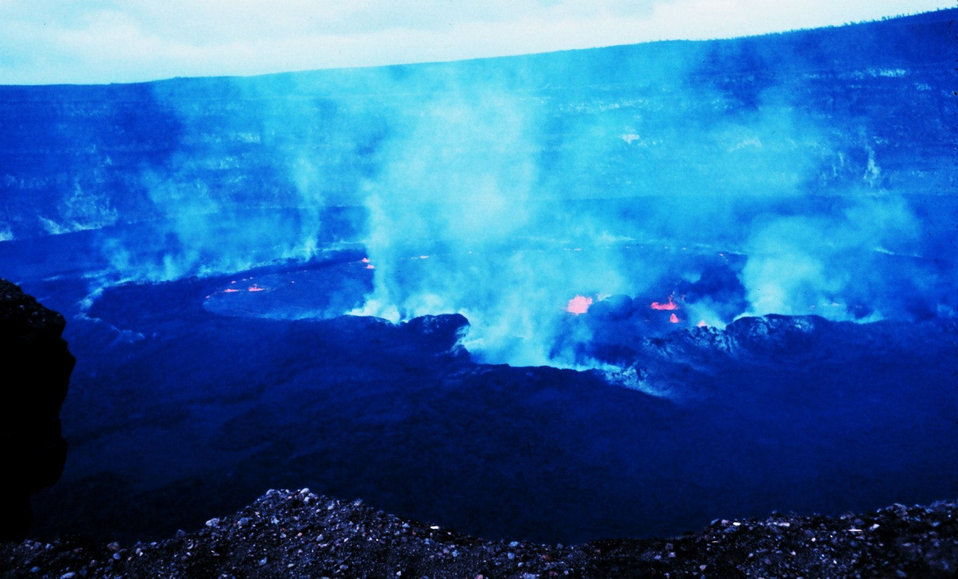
Halemaumau Fire Pit within Kilauea Crater at Volcanoes National Park